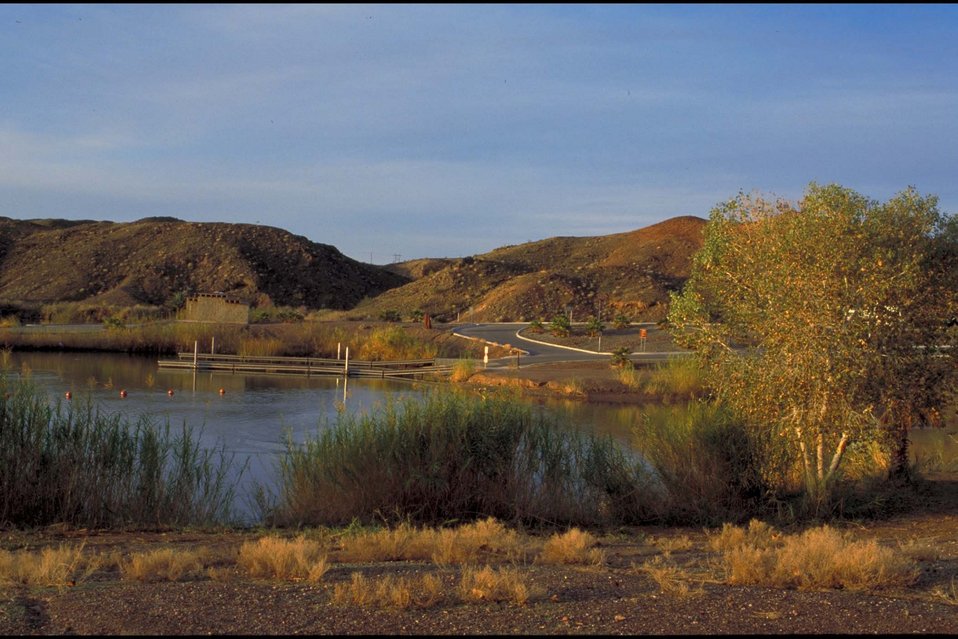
Baot ramp at sunrise at Squaw Lake Recreation Area